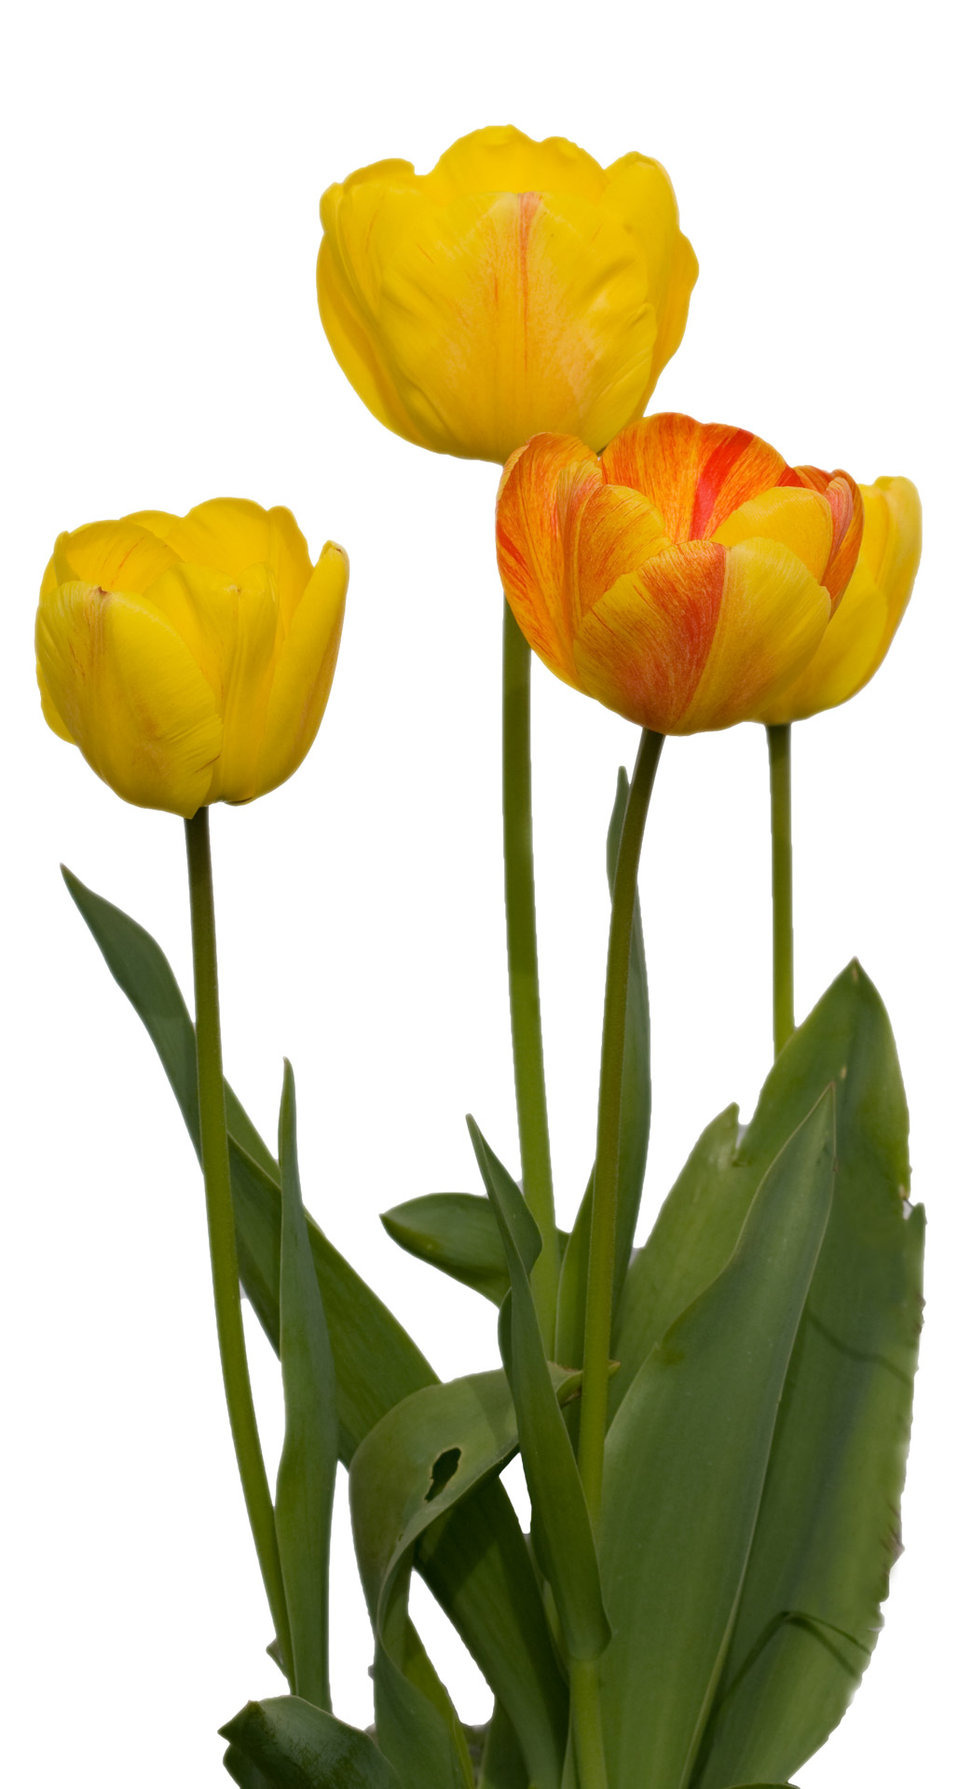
Tulip flowers isolated

Macro image of beautiful yellow and red tulips isolated on white background.